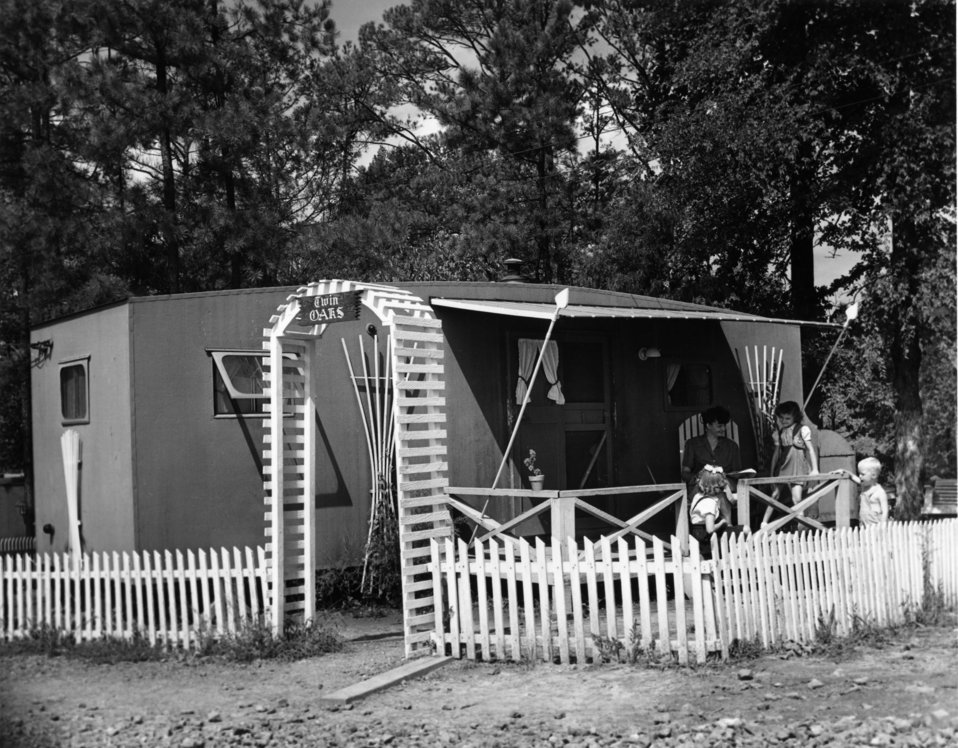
Housing at Oak Ridge